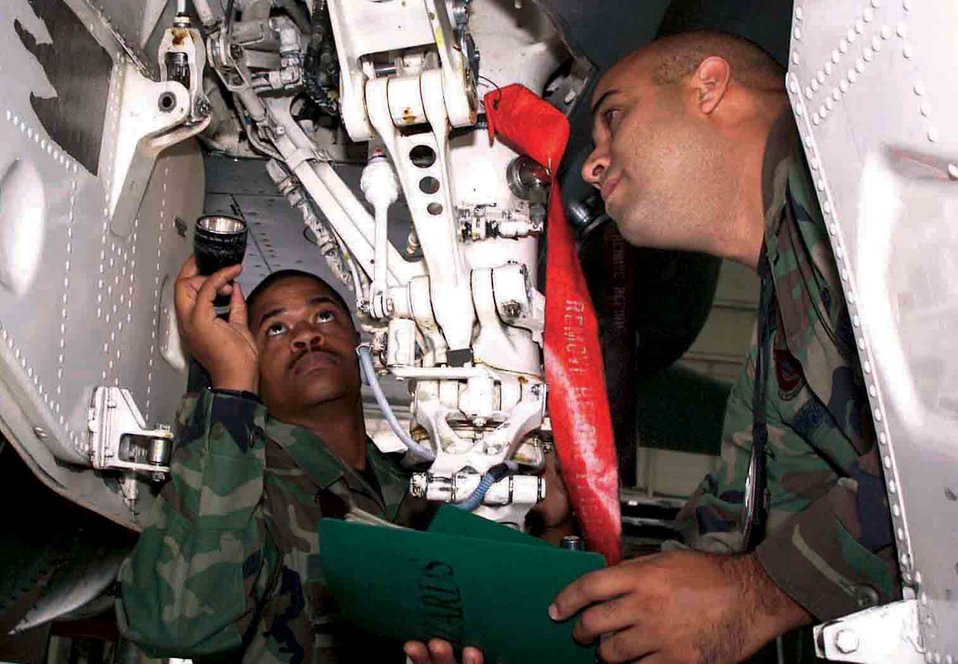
Keeping Eagles flying

EGLIN AIR FORCE BASE, Fla. -- Staff Sgts. Russel Phillips (left) and Angel Rodriguez inspect the wheel well of an F-15 Eagle for anything out of the ordinary. They are F-15 crew chiefs with the 33rd Maintenance Squadron here.